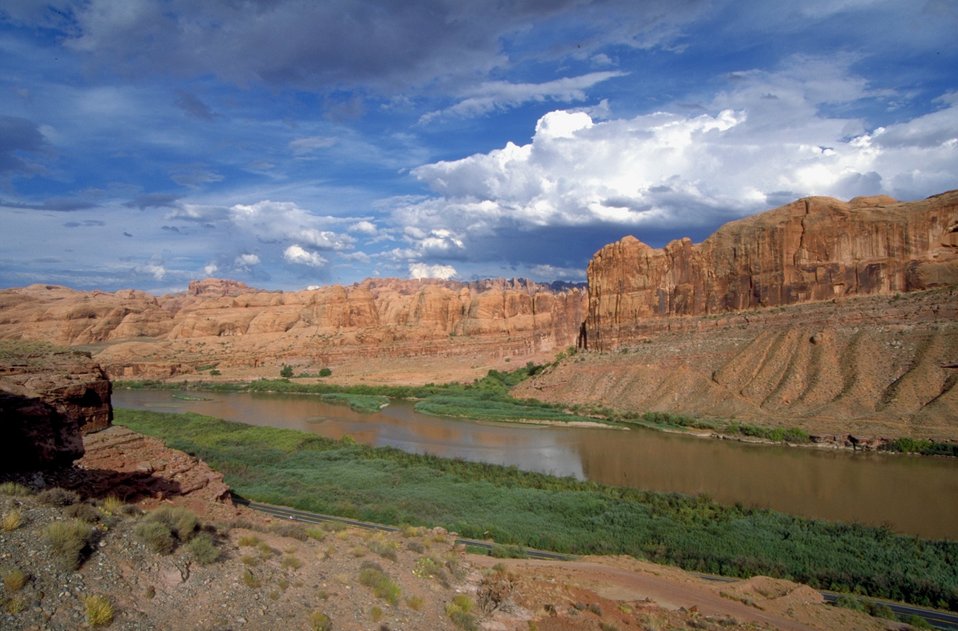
Colorado River near Moab, Utah.